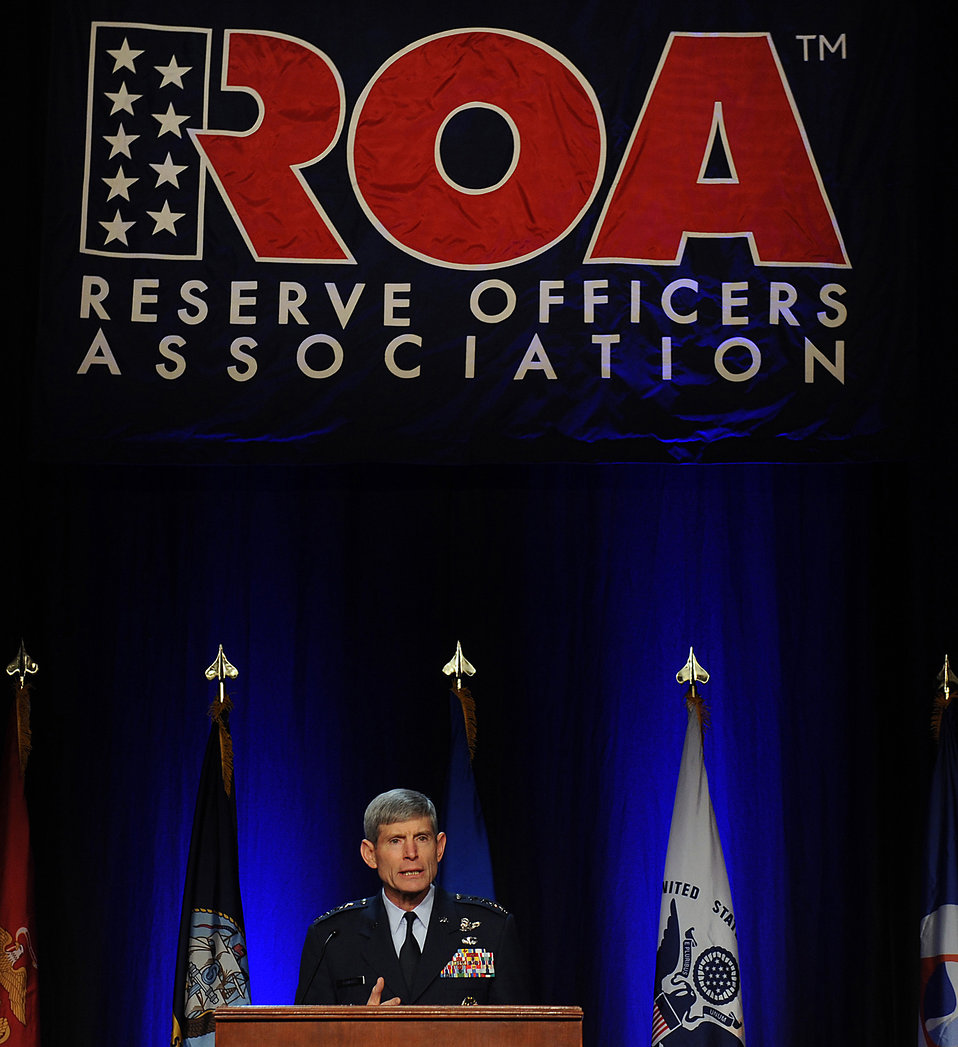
CSAF Speaks at Reserve Officers' Association Symposium

Air Force Chief of Staff Gen. Norton Schwartz speaks at the Reserve Officers Association National Security Symposium Jan. 30, 2011, in Washington, D.C. The general described how Air-Sea Battle will help integrate the efforts of the Navy, Marine Corps and Air Force.